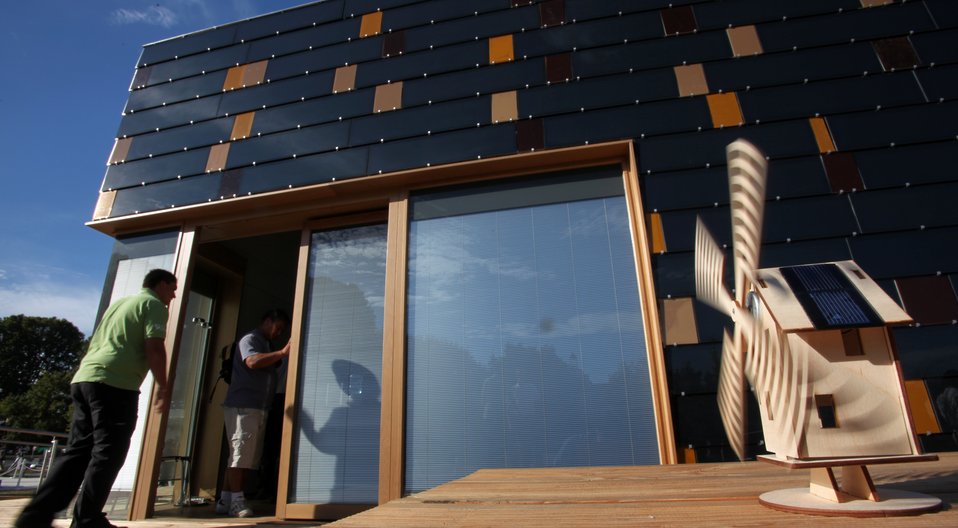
A solar-powered toy operates in front-house of Technische Uuniversitat Darmstadt, Germany, while people take a first look inside on the opening day of the U.S. Department of Energy Solar Decathlon 2009 on the National Mall in Washington, DC, October 8, 2009.
Team Germany won 1st place in the decathlon. The U.S. Department of Energy Solar Decathlon, features energy-efficient, solar powered houses built by 20 university teams from North American and Europe.